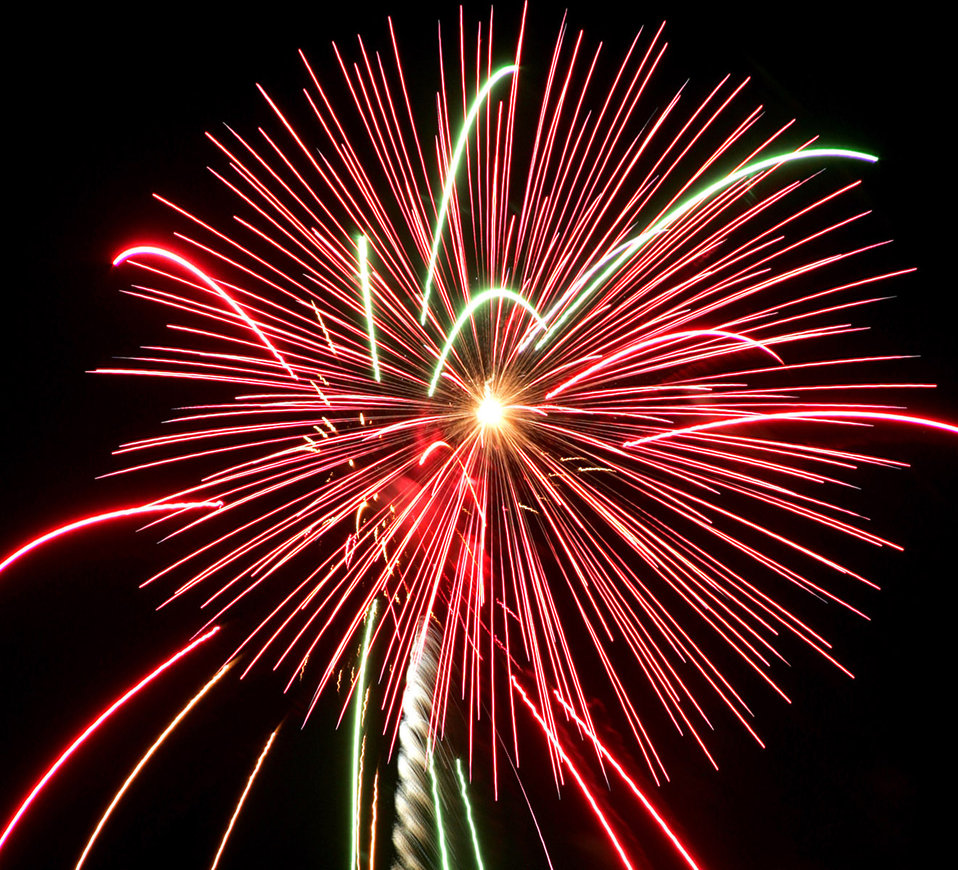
Celebrating the 4th of July

Happy Independence Day, America! Fireworks are shown from the 2005 celebration at Lackland Air Force Base, Texas.